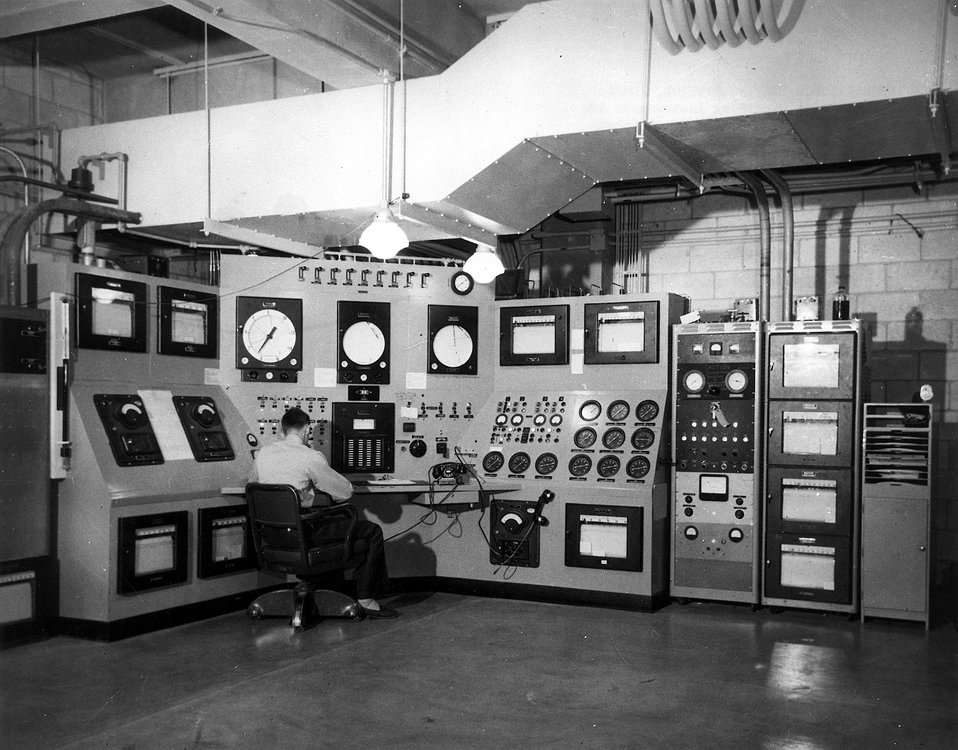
Panel containing recording instruments and controls for one of the more complicated irradiation experiments in the Materials Testing Reactor. Circa 1954.